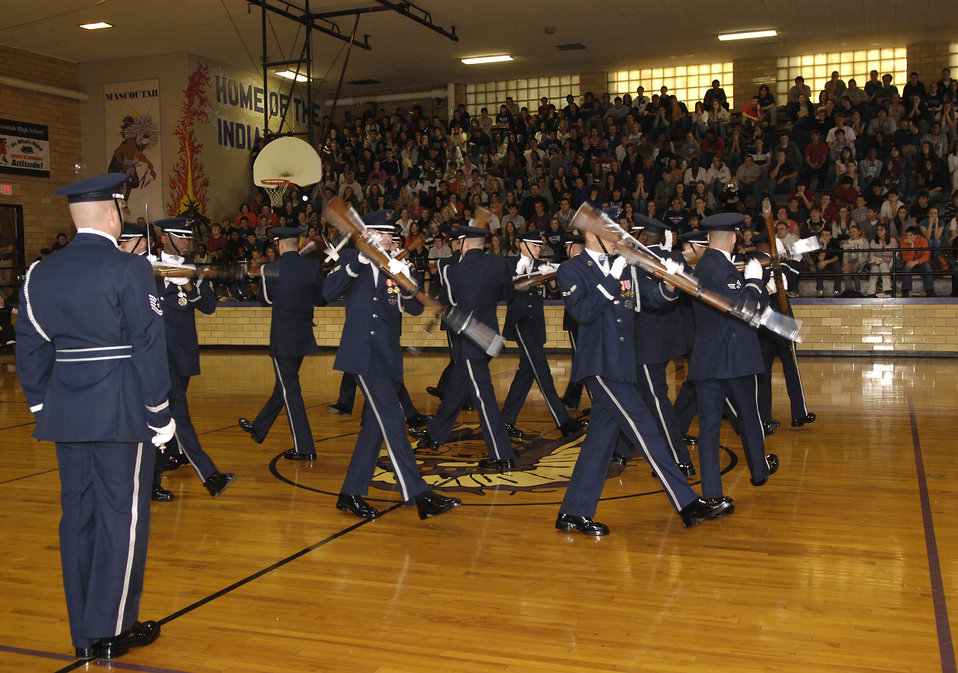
Airman inspiration

The U.S. Air Force Honor Guard Drill Team performed for students Dec. 12 at Mascoutah High School in Mascoutah, Ill. The Drill Team travels stateside and abroad performing drills for public and military audiences to recruit and inspire current and future Airmen.